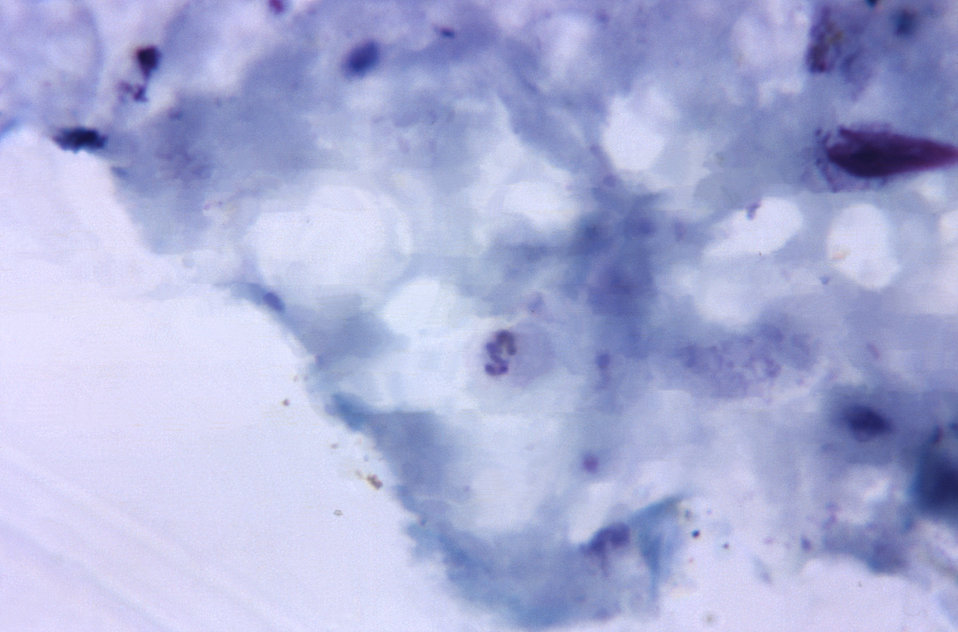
Magnified 1125X, this thick film photomicrograph revealed the presence of a growing Plasmodium vivax amoeboid trophozoite. There also appeared to be no evidence of Sch�'s dots.